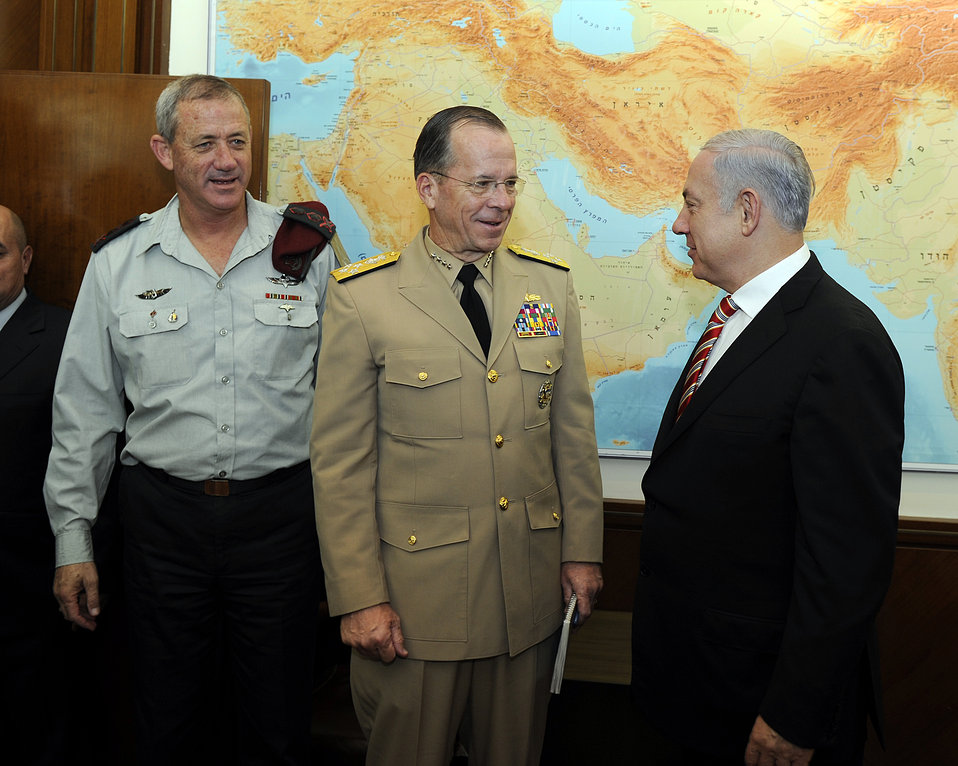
Admiral Mullen Meets With Israeli Prime Minister Netanyahu

Admiral Michael Mullen, Chairman of the Joint Chiefs of Staff of the U.S. Military, meets with Israeli Prime Minister Benjamin 'Bibi' Netanyahu, in Jerusalem on July 19.